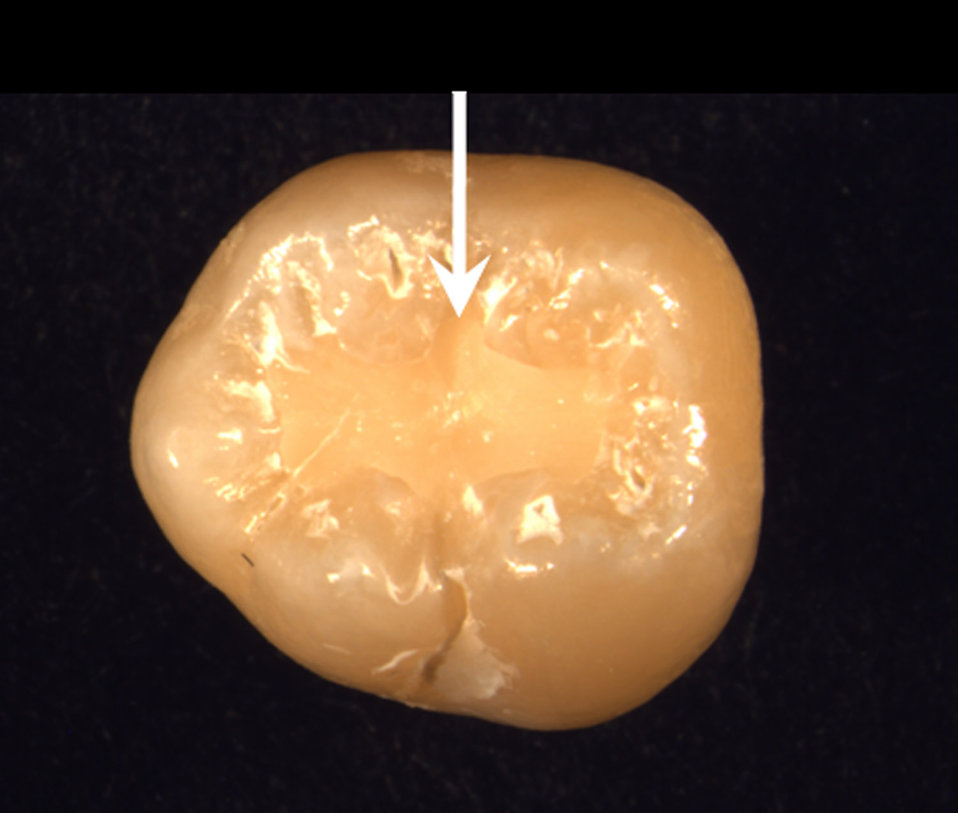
New Nanocomposites May Mean More Durable Tooth Fillings

A calcium phosphate nanocomposite filling in a tooth. The nanocomposite can 'smartly' release decay-fighting agents to buffer against acids produced by bacteria, and rebuild the lost tooth minerals by releasing ions into the mineral-deficient area of the tooth.